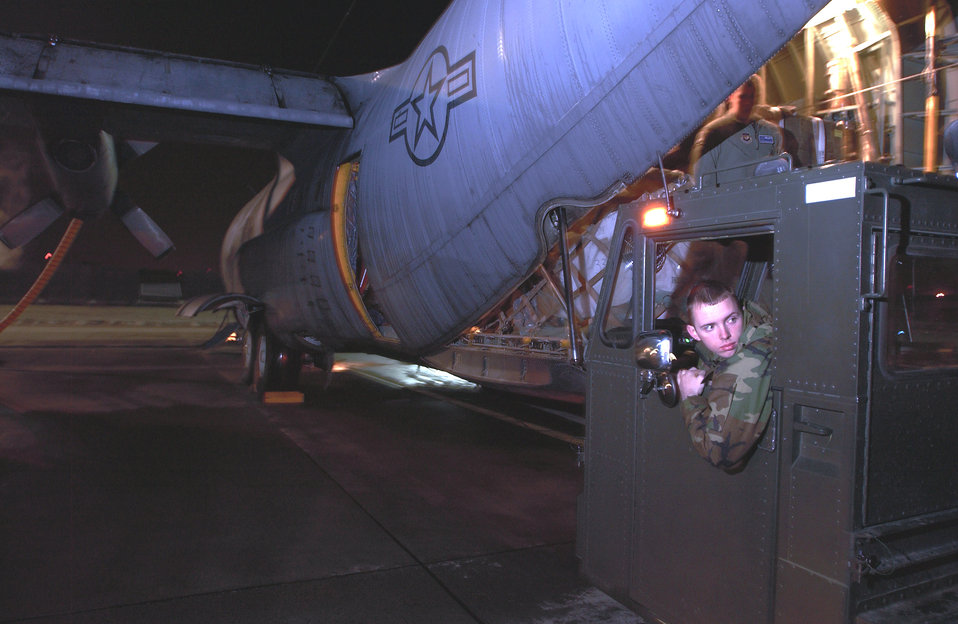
Help is on the way

RAMSTEIN AIR BASE, Germany -- Senior Airman Teddy Whitton pulls a 60-K loader away after loading humanitarian relief supplies aboard a C-130 Hercules here destined for Morocco on Feb. 27. The plane is carrying relief supplies and a U.S. European Command Humanitarian Assistance Survey Team, which will help determine how the United States can assist Morocco following a 6.5-magnitude earthquake. The quake killed nearly 600 people in the northern part of the country Feb. 24. Airman Whitton is assigned to the 723rd Air Mobility Squadron.